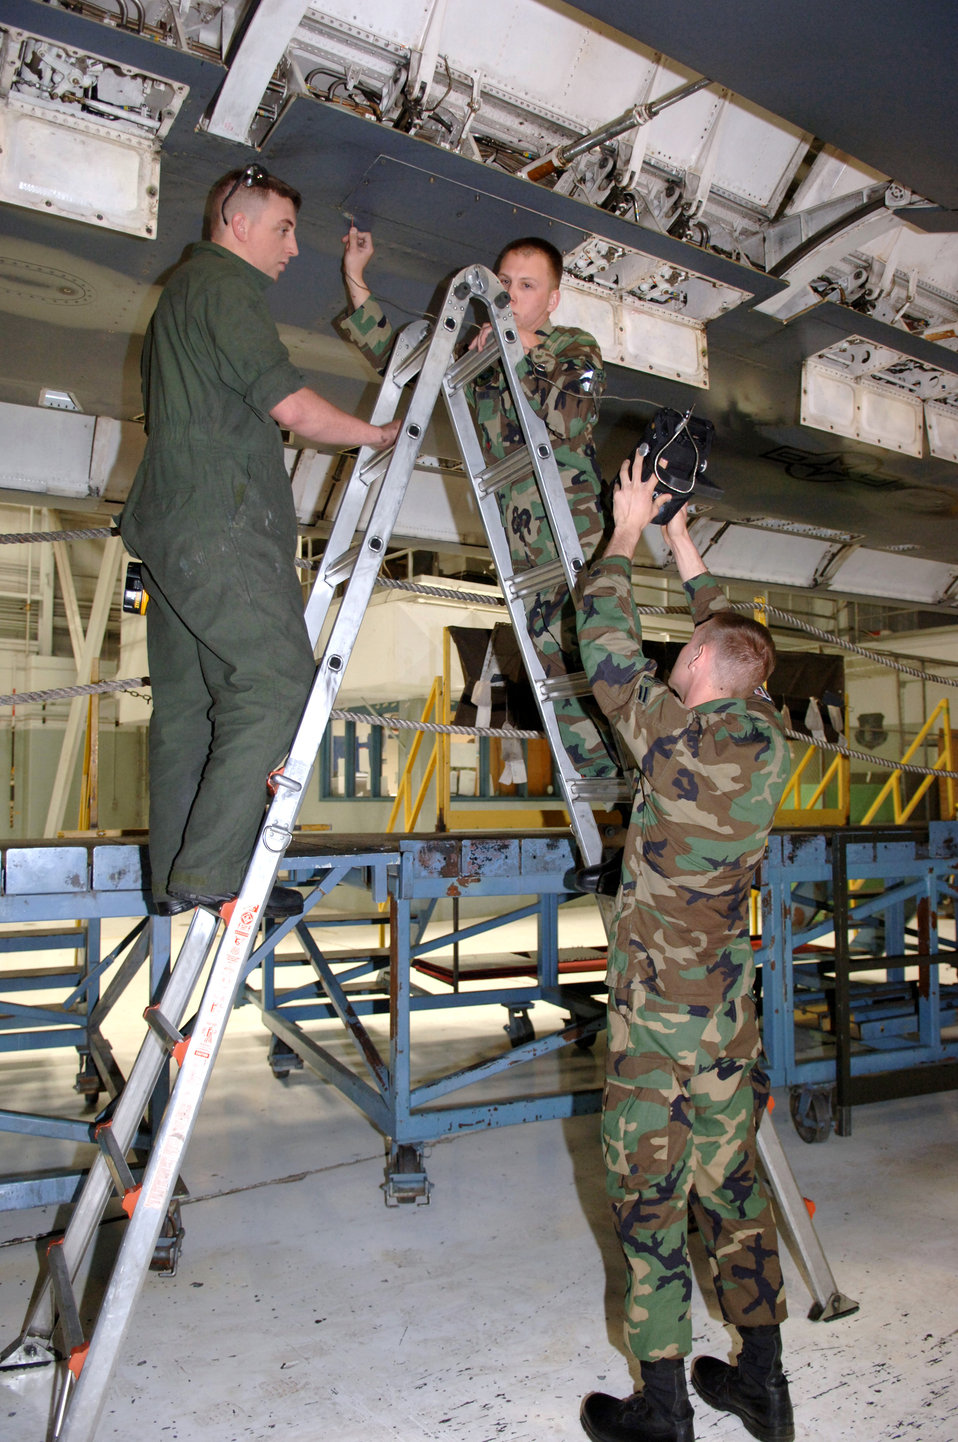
Inspections technicians know-how

Staff Sgt. Christopher Grafel and Airman 1st Class Ehud Torres inspect for possible cracks with the Nortec 2000D on the B-1B Lancer March 19 at Ellsworth Air Force Base, S.D. The Airmen are nondestructive inspections technicians with the 28th Maintenance Squadron.